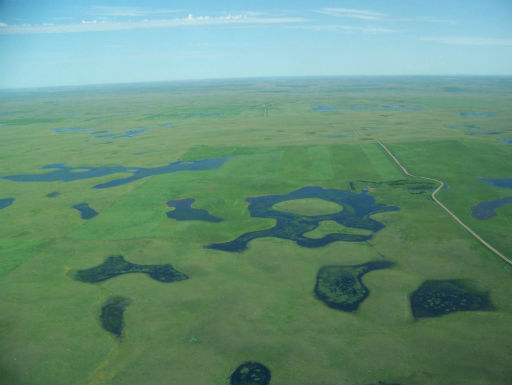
Prairie potholes in the Bowdoin WMD